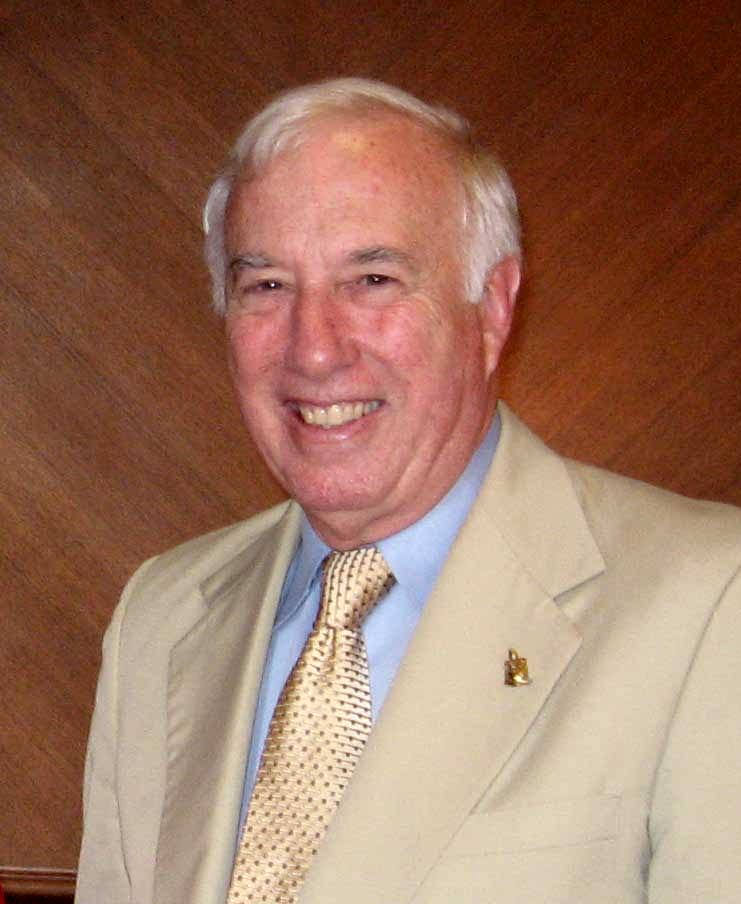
Clayton Daniel Mote, Jr., in his office at the University of Maryland, College Park.